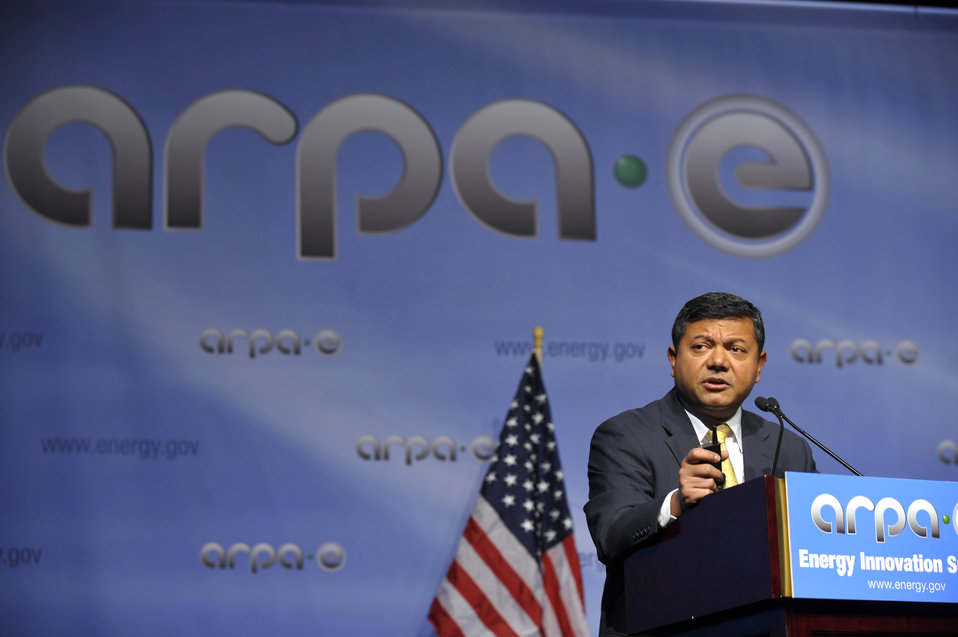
ARPA-E Energy Innovation Summit 2011, 66 of 83

Dr. Arun Majumdar, Director, ARPA-E.